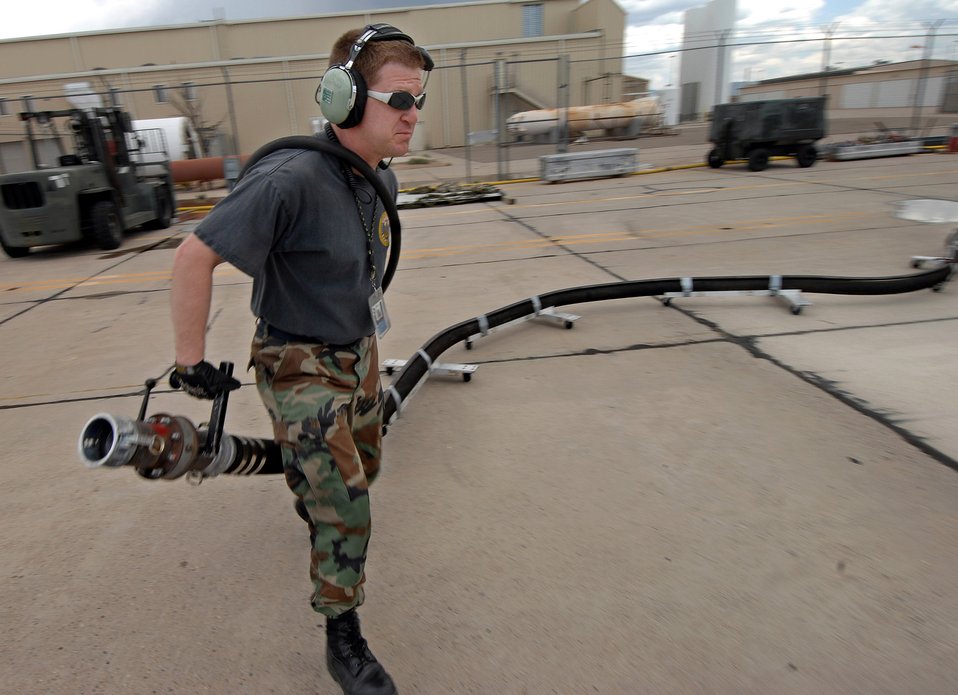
Air Force aerial firefighters train in New Mexico

Master Sgt. Tracey White drags a Modular Airborne Fire Fighting System hose to a waiting C-130 Hercules to charge the aircraft's MAFFS tanks with water and air May 1 at the Albuquerque Air Tanker Base in New Mexico. C-130 aircrews from the Air Force Reserve Command unit based at Peterson Air Force Base, Colo., and Air National Guard units trained at the U.S. Forest Service's Albuquerque Air Tanker Base. Sergeant Tracey is assigned to the 302nd Maintenance Squadron from Peterson Air Force Base, Colo.